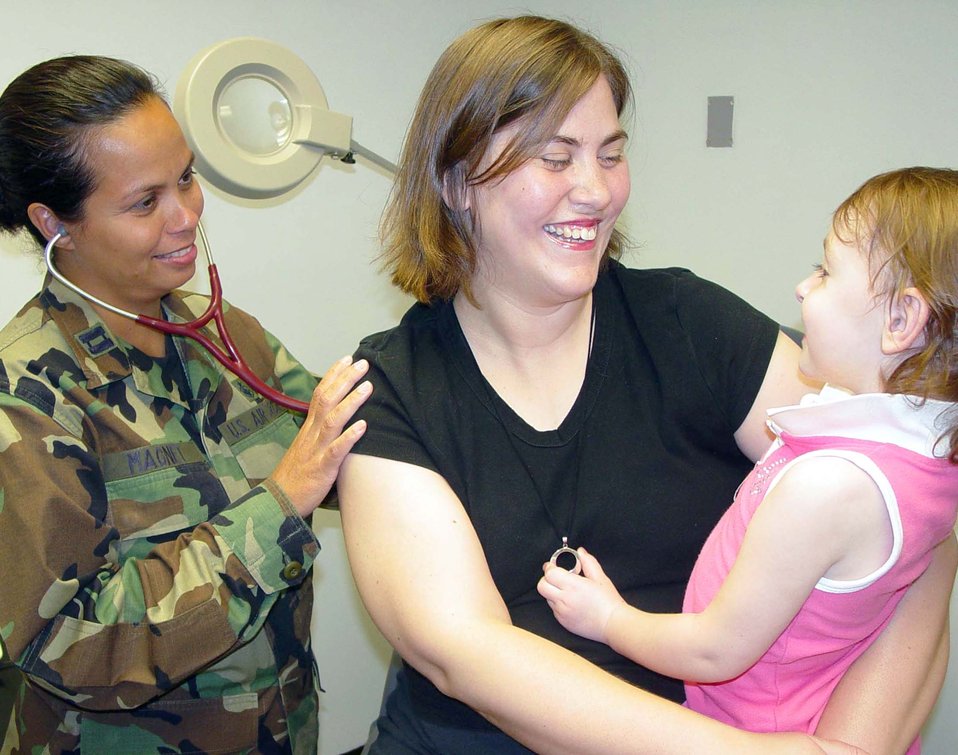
Keesler Medical Center rebounds from Katrina

Capt. Marli Magnet examines Rebecka Rogers, holding daughter Alyssa, 3, during an appointment in the family practice clinic. Captain Magnet is a family practice nurse practioner for the 81st Medical Operations Squadron. Rebecka's husband, Senior Airman Christopher Rogers, is assigned to the 338th Training Squadron. Family practice, pediatric and women's health are scheduled to return to their pre-Katrina basement location in September.